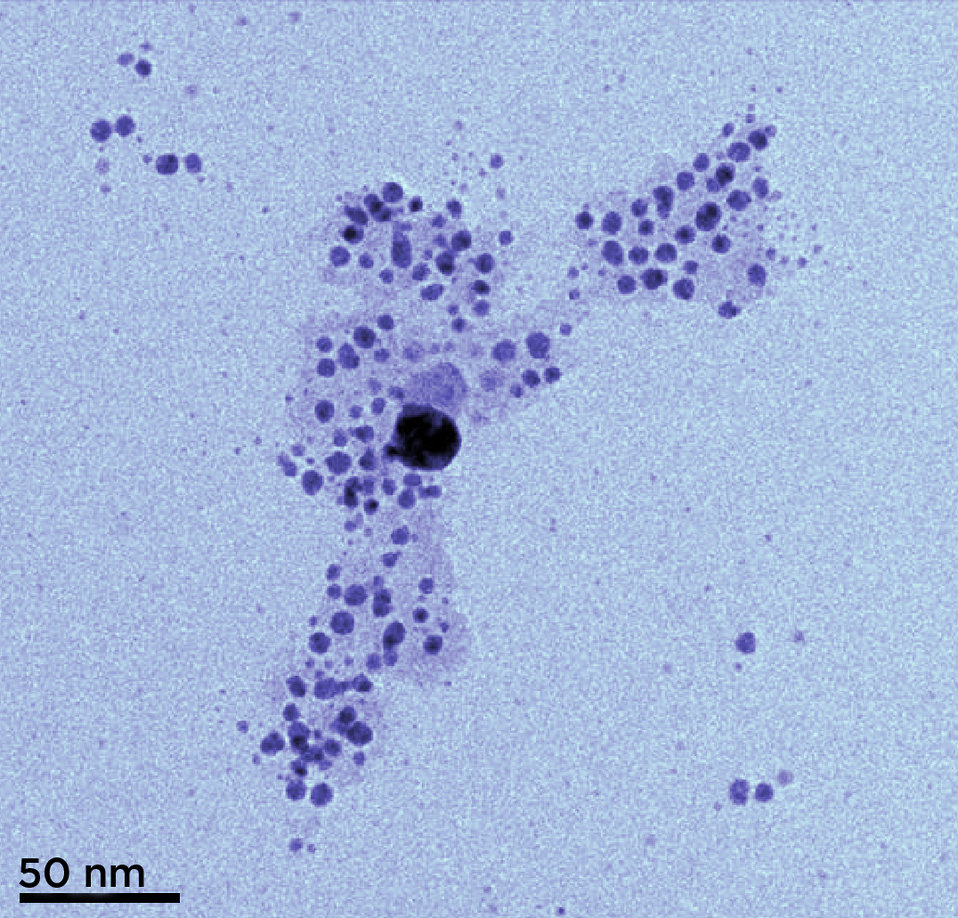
TEM; Silver Nanoparticles

Transmission electron microscopy (TEM) image of silver nanoparticles formed from silver ions in solution with humic acid. The acid tends to coat the nano particles (visible here as a pale cloud), keeping them in a colloidal suspension instead of clumping together. (Color added for clarity.)